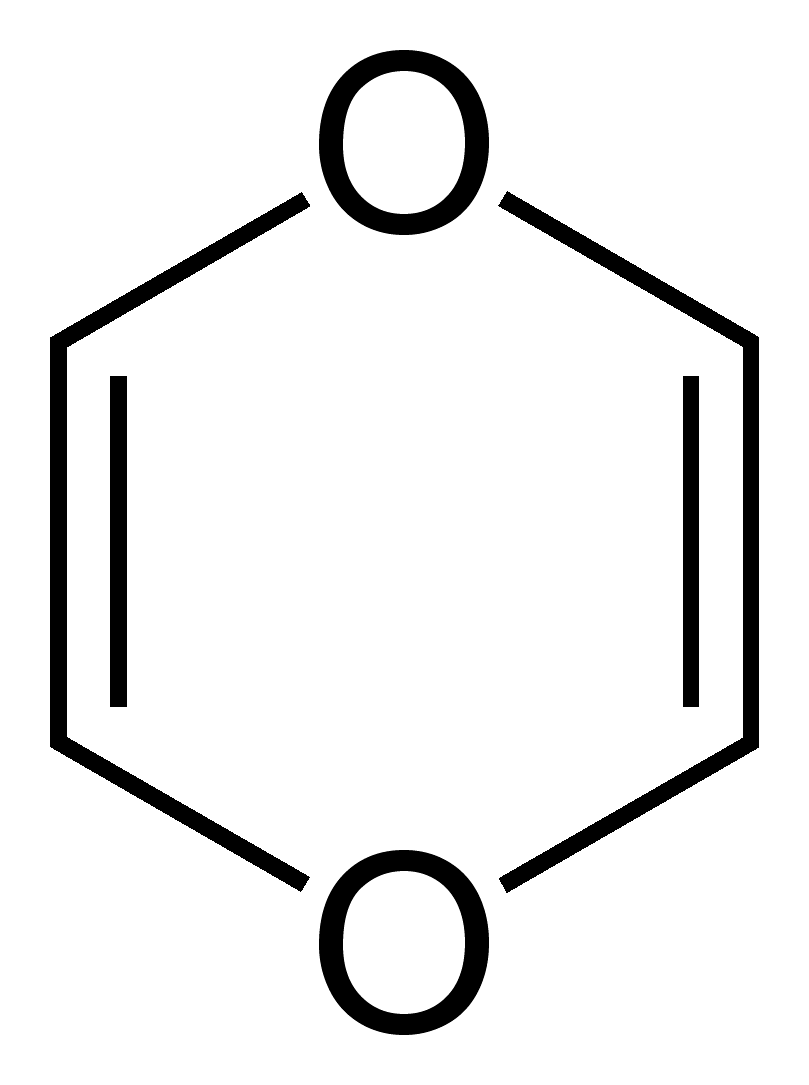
Skeletal formula of 1,4-dioxin